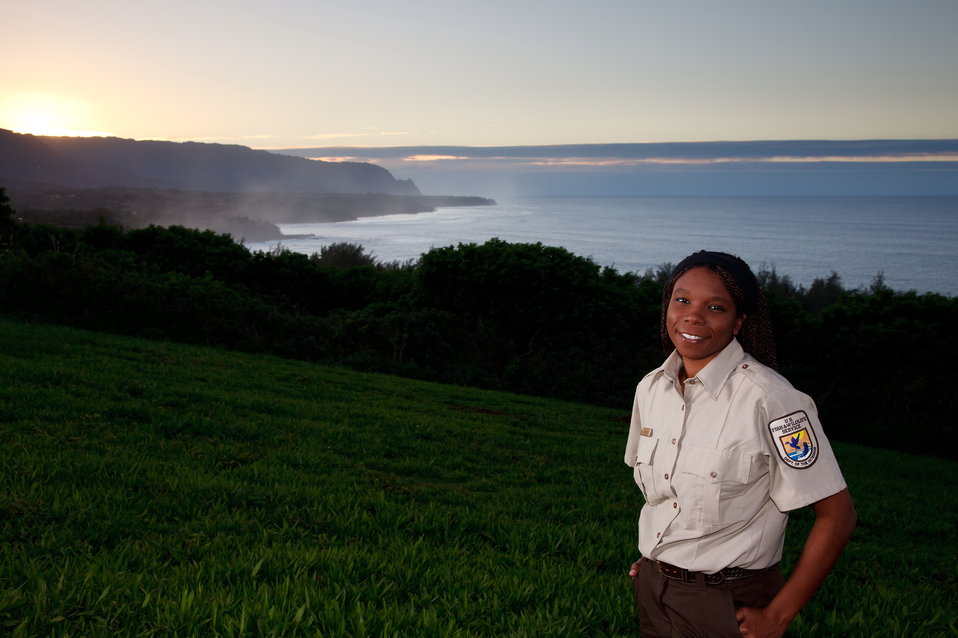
Shannon Smith, manager of Kaua'i National Wildlife Refuge Complex in Hawaii.